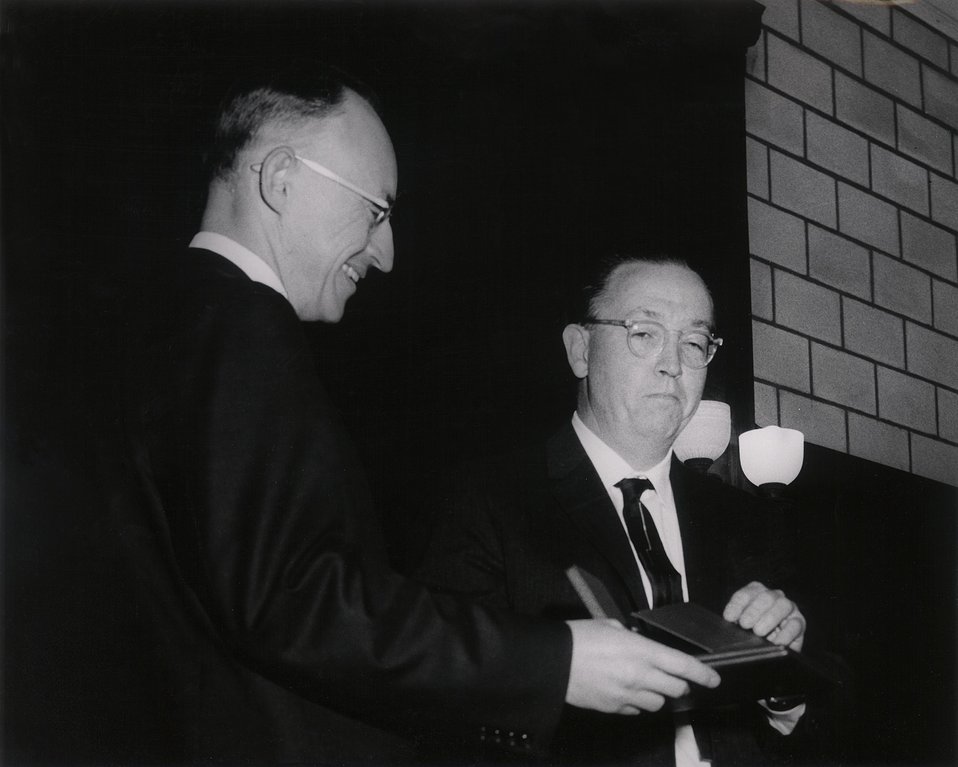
Comm. James T. Ramey, James M. Taub. ERNEST O. LAWRENCE AWARD - 1963. National Academy of Sciences, April 25, 1963.